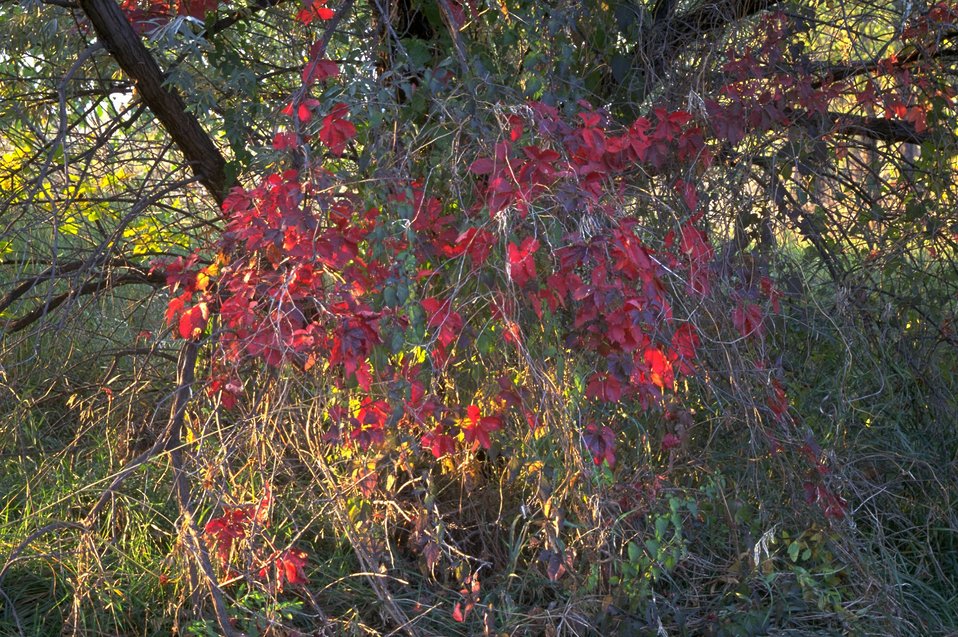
Red leaves at Matthews Recreation Site